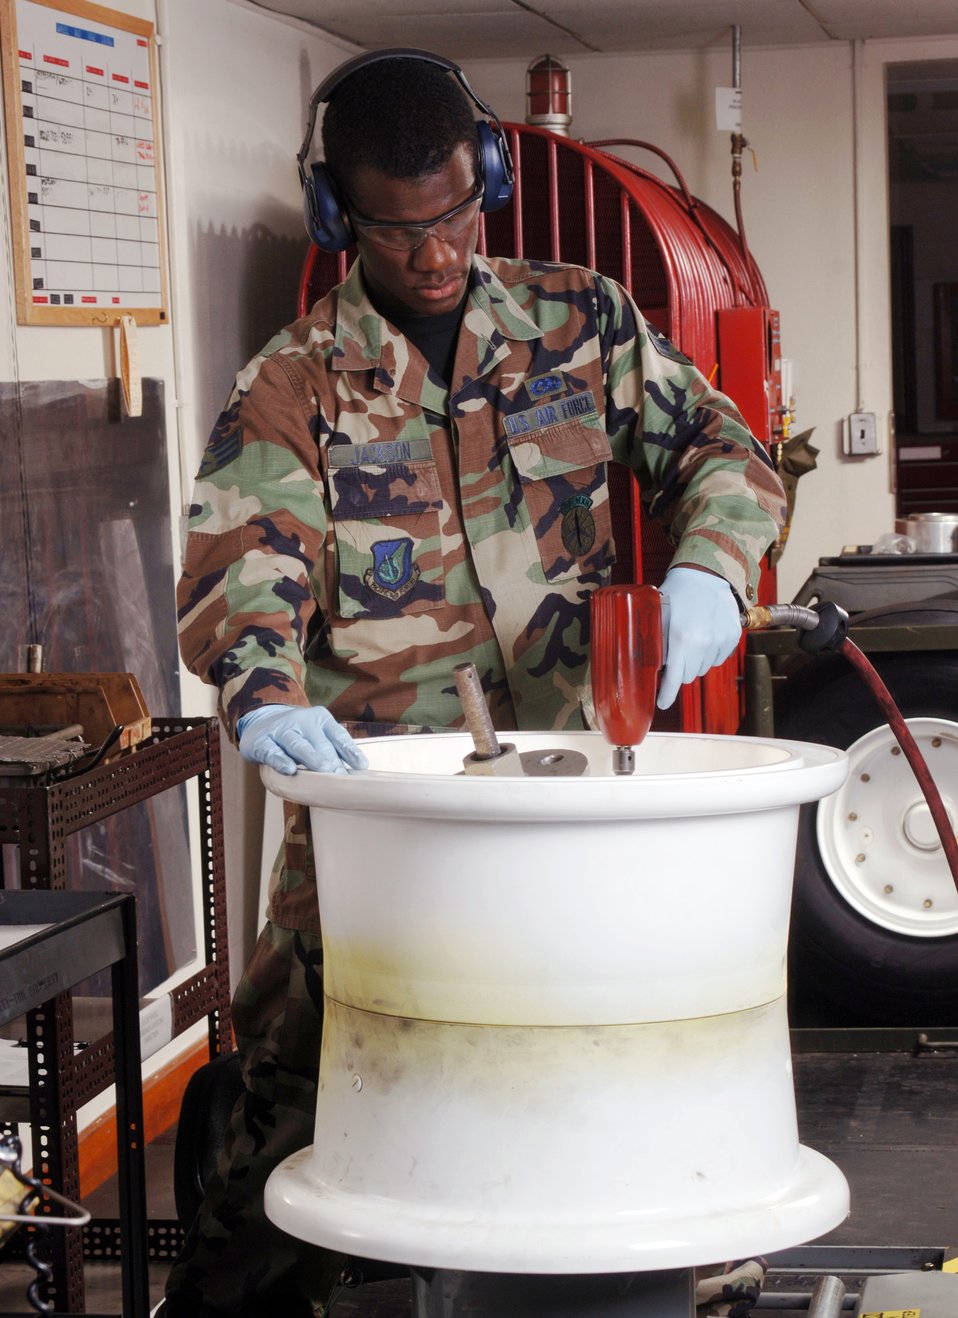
Preventive maintenance

YOKOTA AIR BASE, Japan (AFPN) -- Senior Airman William Jackson uses an impact wrench to remove bolts from a C-130 Hercules main landing gear wheel. He is an aero repair technician with the 374th Maintenance Squadron.